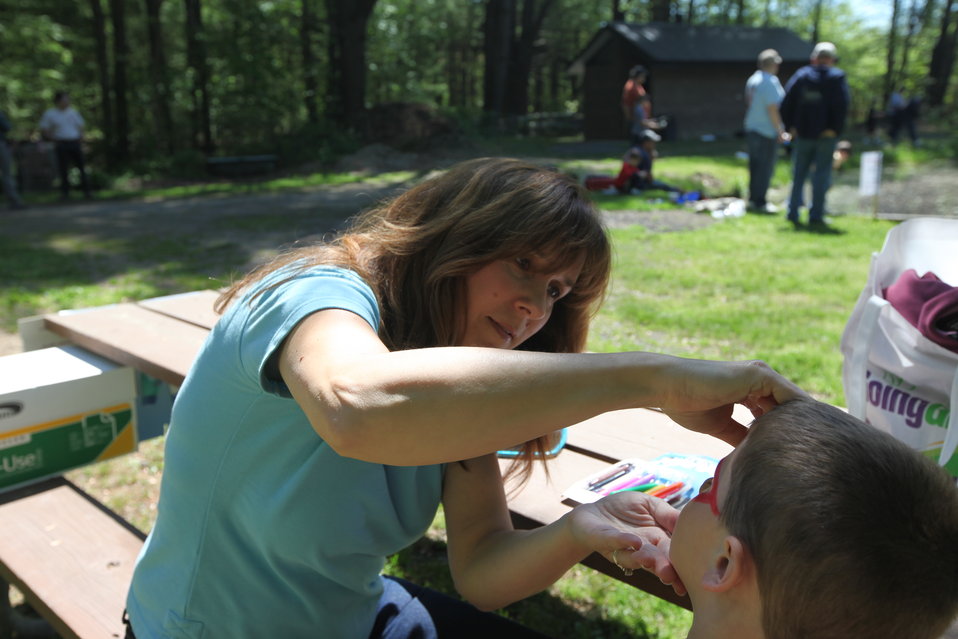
Youth Fishing Derby 2012

Megan Nagel/USFWS